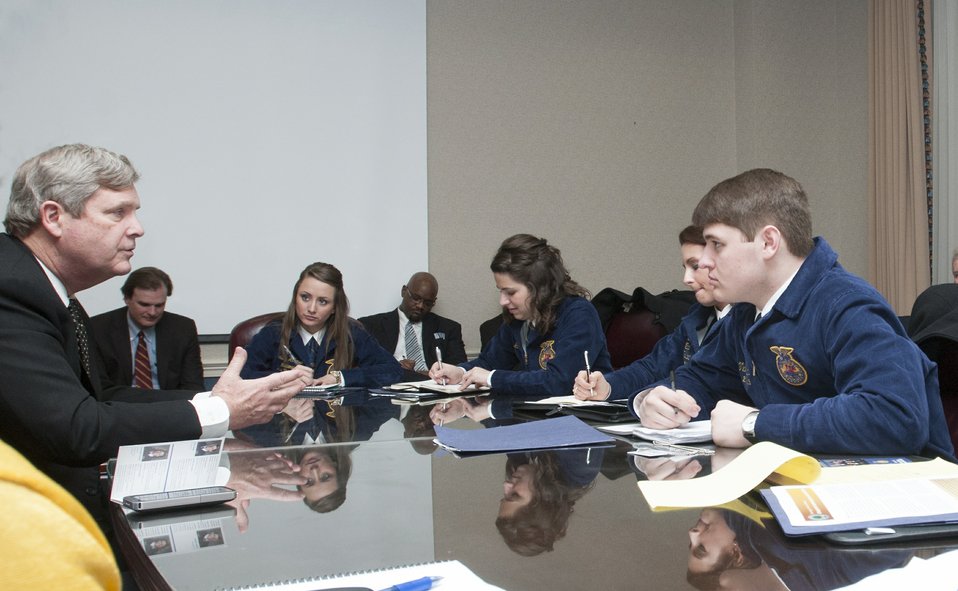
Agriculture Secretary Tom Vilsack meets with FFA National officers in the Wallace room at the U.S. Department of Agriculture (USDA) in Washington, D.C., on Wednesday, Jan. 16, 2013.